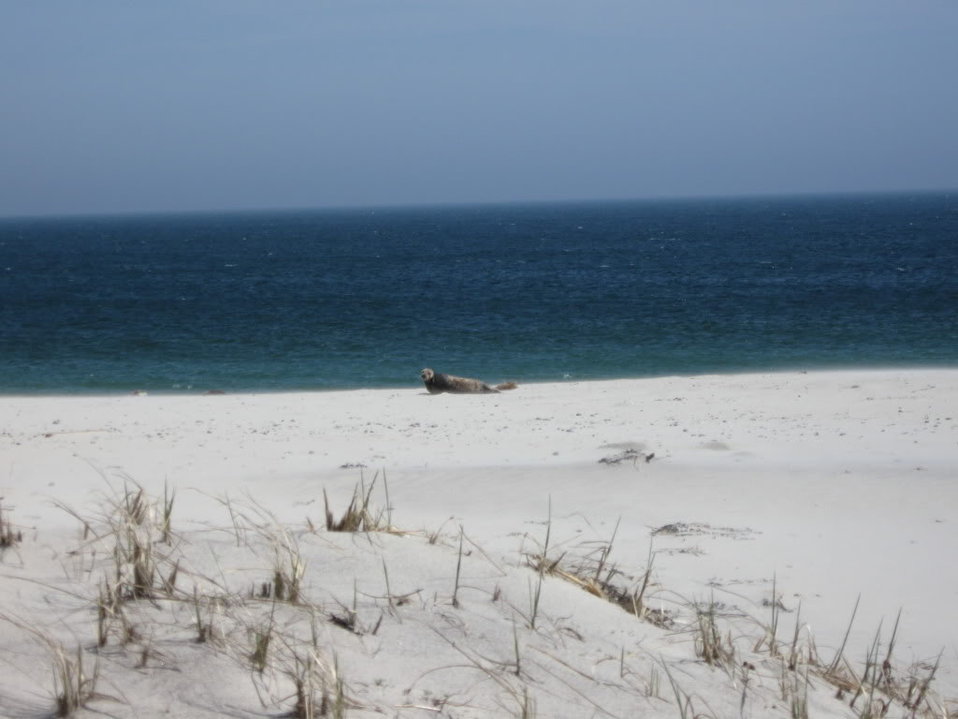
Seals at Monomoy National Wildlife Refuge.

Credit: Zachary Cava/USFWS

Monomoy National Wildlife Refuge is part of the Eastern Massachusetts National Wildlife Refuge Complex.